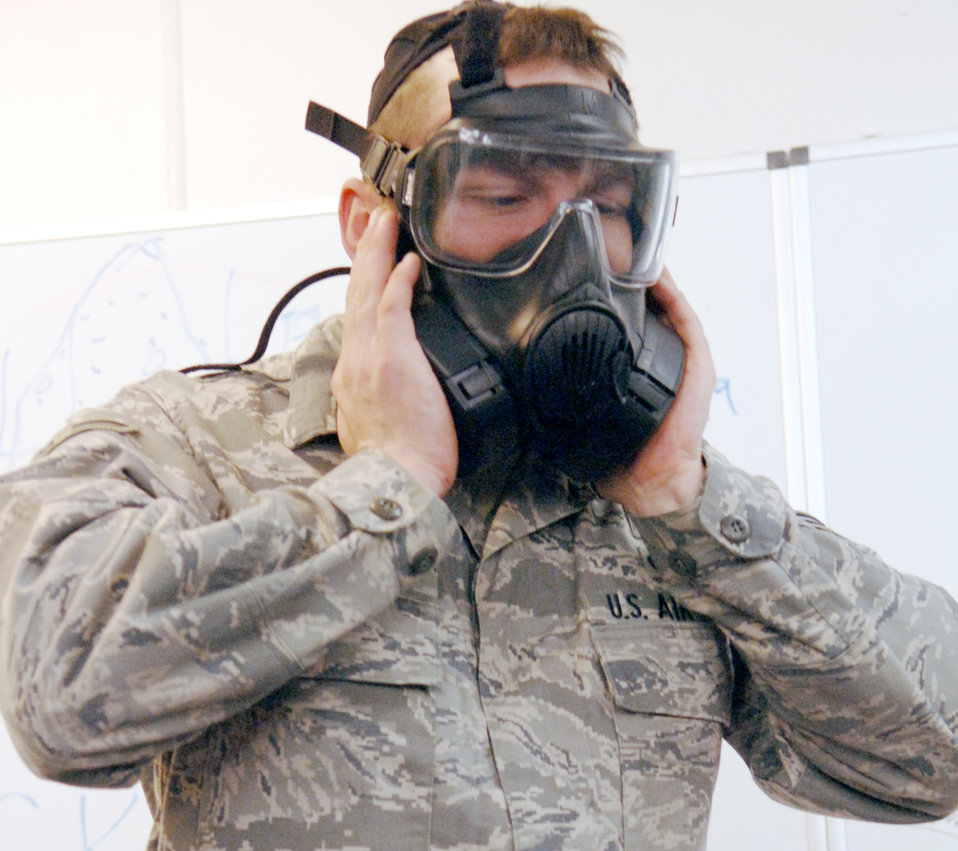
Ramstein Airmen improve training, effectiveness with M-50 mask

Airman 1st Class Michael Balbaugh demonstrates how to check the seal of the M-50 Joint Service General Purpose Mask, Nov. 5, 2009, Ramstein Air Base, Germany. The mask has two filters as opposed to the one canister filter on the MCU-2 mask. Airman Balbaugh is from the 886th Civil Engineer Squadron as a readiness and emergency management apprentice.